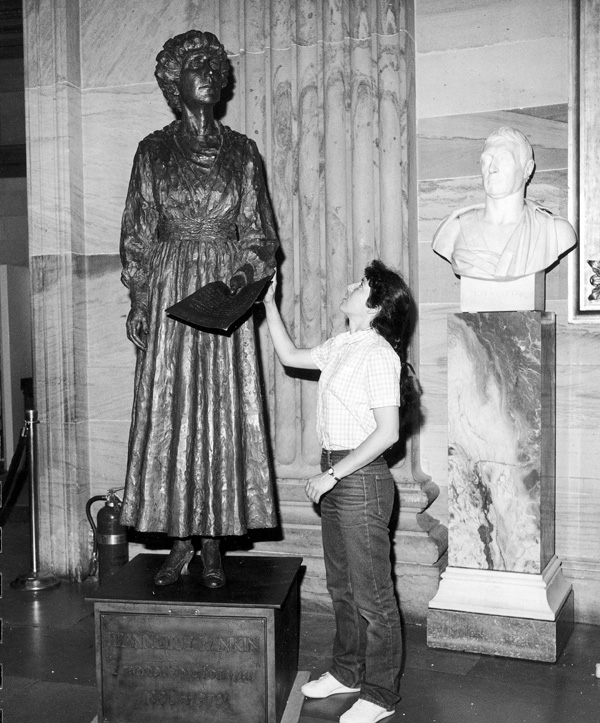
Terry Mimnaugh (1956- ) - Women Artists

Sculptor, Bronze statue of Jeannette Rankin of Montana for the National Statuary Hall Collection.